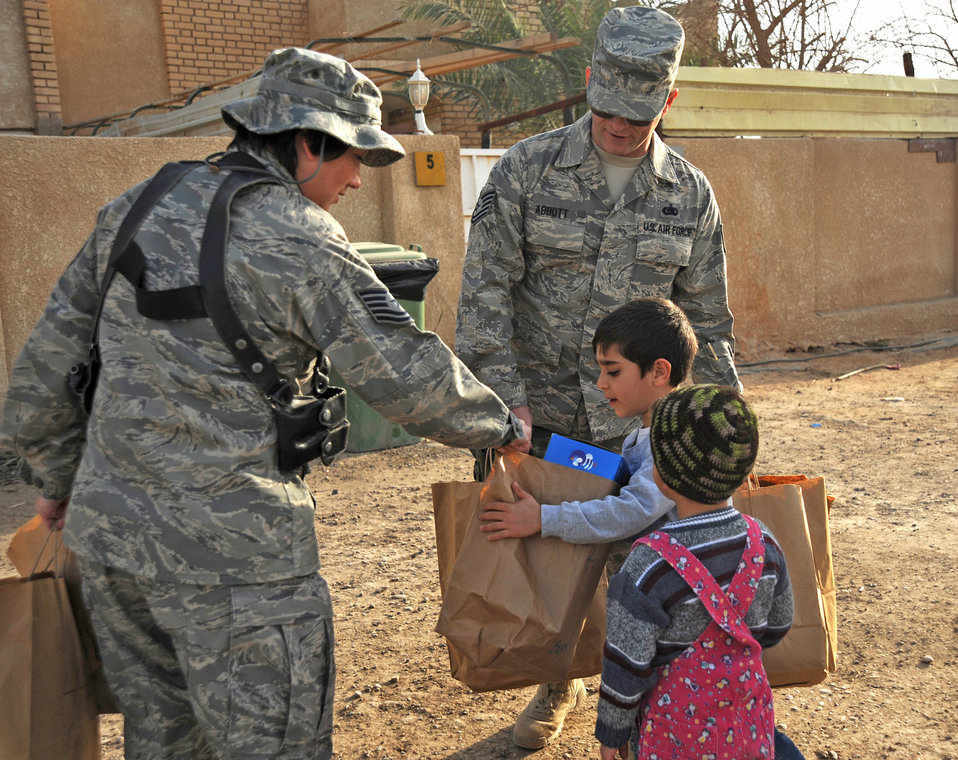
Servicemembers donate items to Iraqi neighbors

Tech. Sgt. Cynthia Callaway hands a child a bag with toys and games Jan. 29, 2010, near Sather Air Base, Iraq, while volunteering with the Sather AB Rising Six good neighbor program. Sergeant Callaway is assigned to the 447th Expeditionary Logistics Squadron.